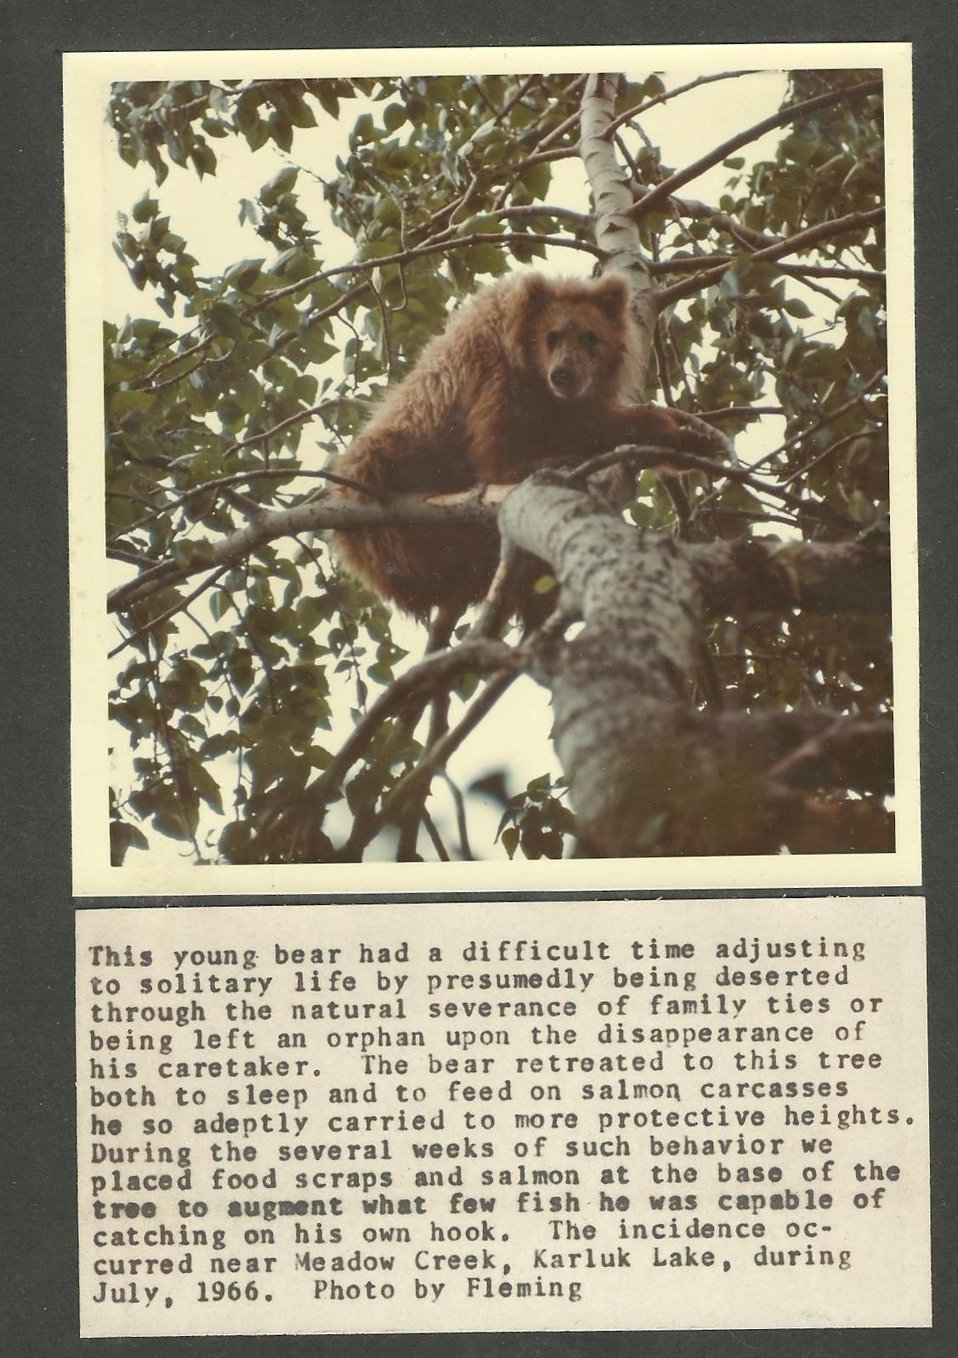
(1966) Bear in a Tree

Credit: USFWS

Source and Contact: Kodiak National Wildlife Refuge